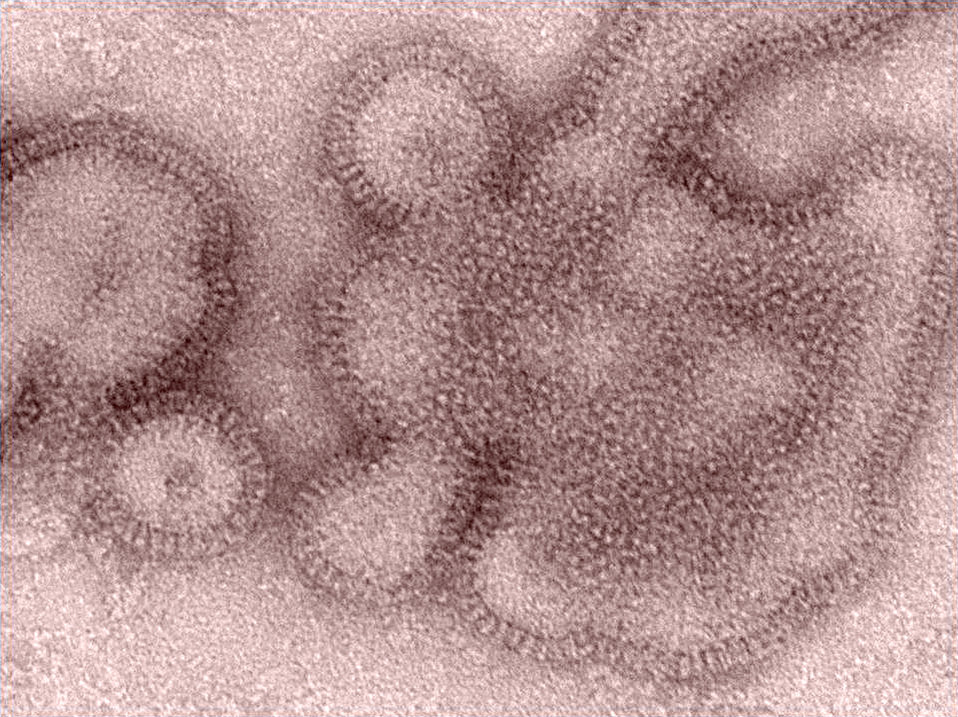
This transmission electron micrograph (TEM) depicts some of the ultrastructural details displayed by H3N2 influenza virions responsible for casing illness in Indiana and Pennsylvania in 2011.